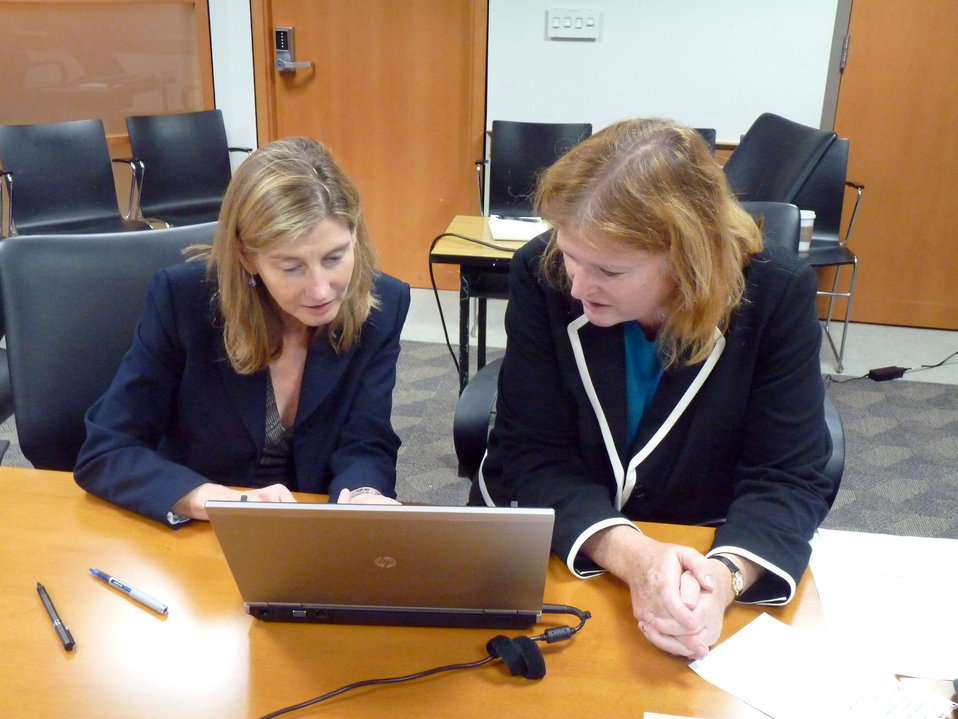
Assistant Secretary Richard and USAID Assistant Administrator Lindborg Respond to #AskState Questions

Assistant Secretary for the Bureau of Population, Refugees, and Migration Anne C. Richard and USAID Assistant Administrator for Democracy, Conflict, and Humanitarian Assistance Nancy Lindborg respond to questions during a Twitter Q&A on humanitarian assistance for Syrian refugees, at the U.S. Department of State in Washington, D.C., September 20, 2012.